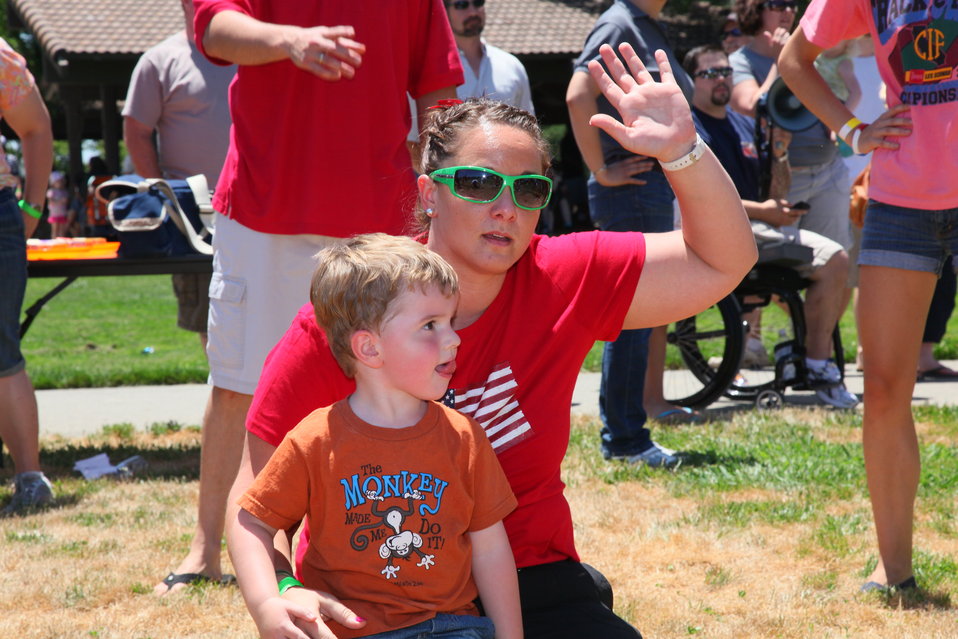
2011 Annual Picnic